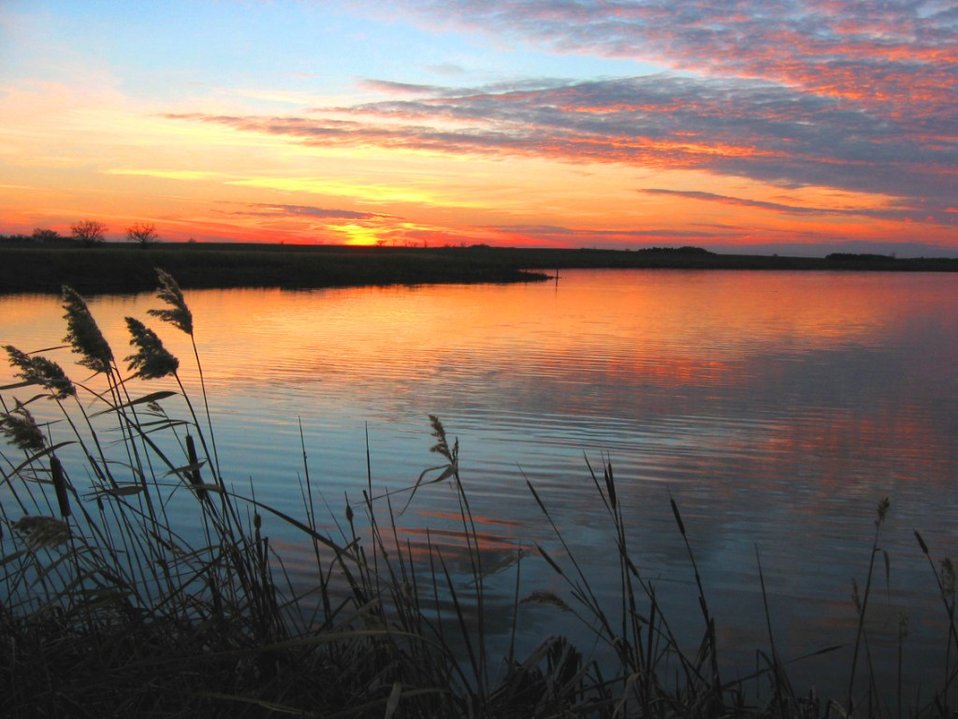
November Sunset

Sunset at J. Clark Salyer NWR in North Dakota.